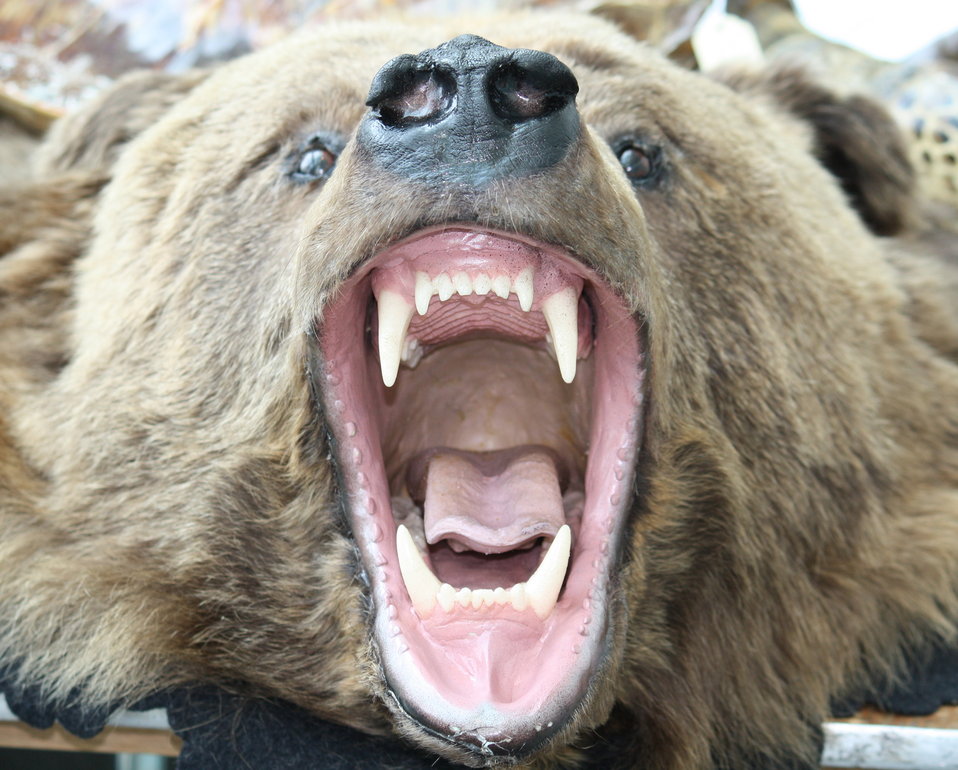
Grizzly Bear Head